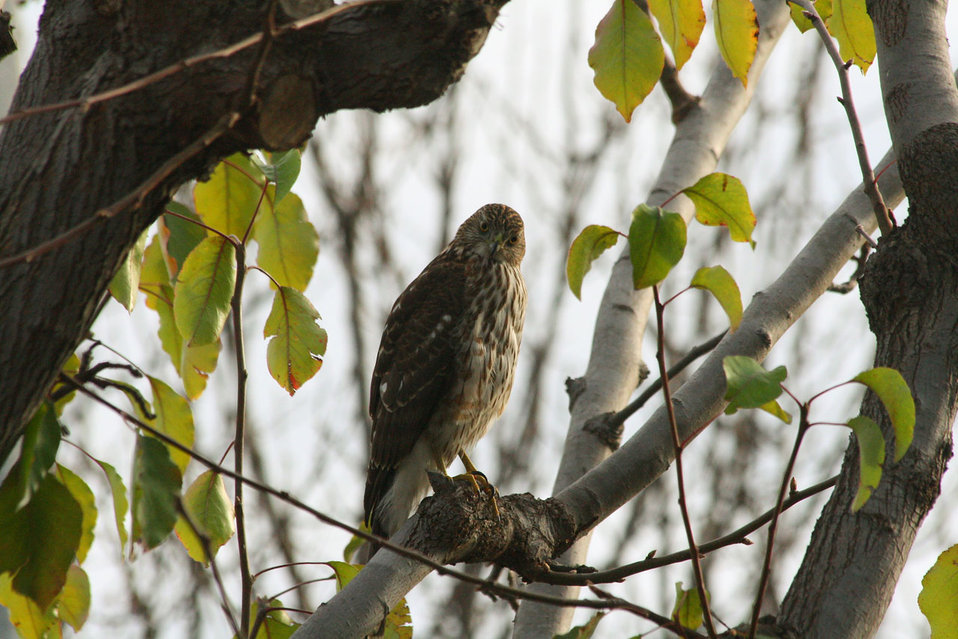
Young hawk

Shot in a tree across the street from our house in downtown huntington beach, ca.